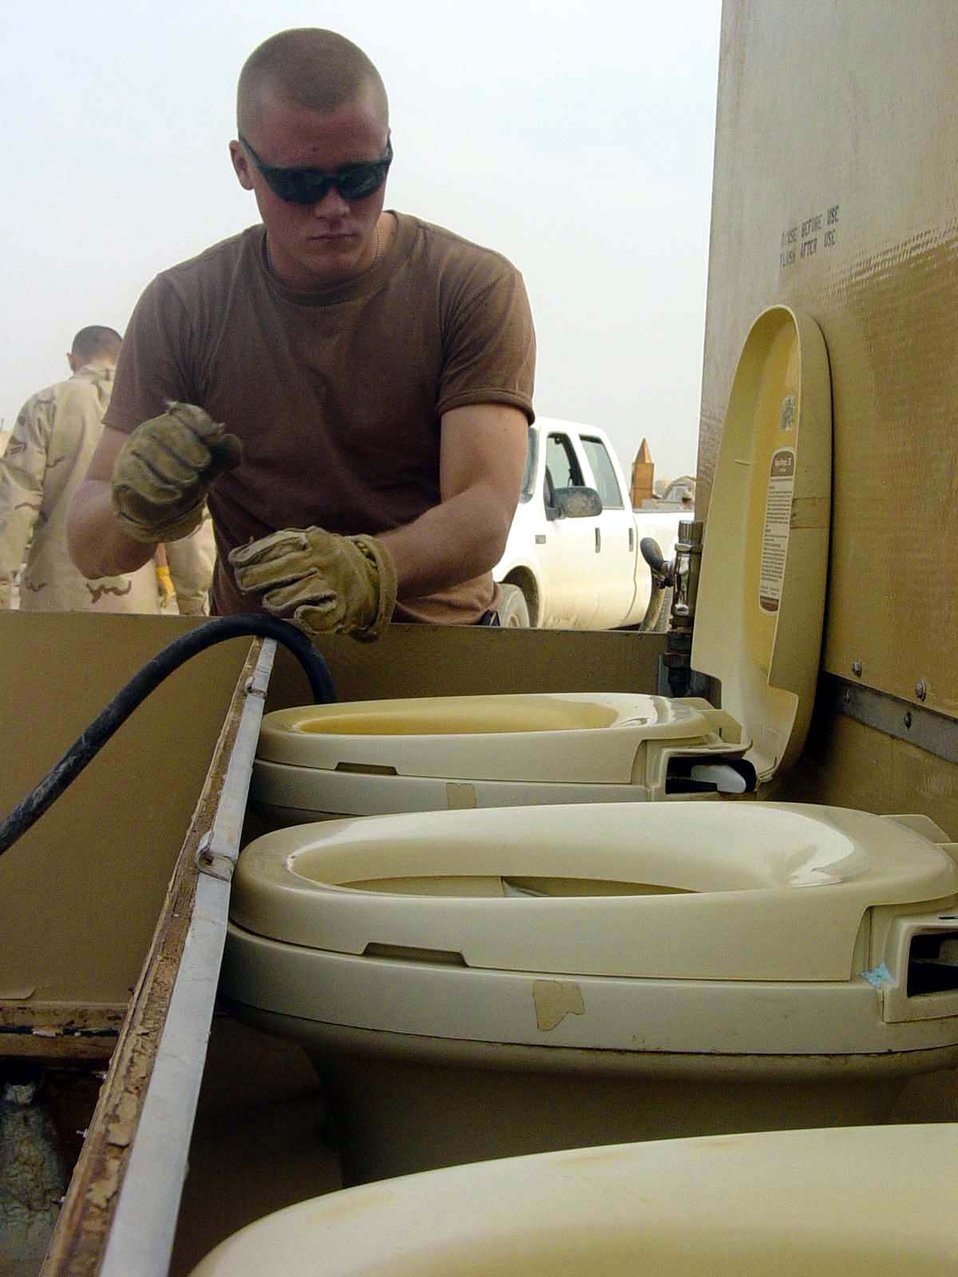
Tearin' down toilets

TALLIL AIR BASE, Iraq -- Airman 1st Class Jason Hill breaks down a Harvest Falcon latrine tent so a new cadillac latrine can be installed in its place. The cadillac latrines provide a more comfortable, private environment and are an important quality-of-life issue, officials said. Hill is a utilities-systems apprentice deployed from Fairchild Air Force Base, Wash.